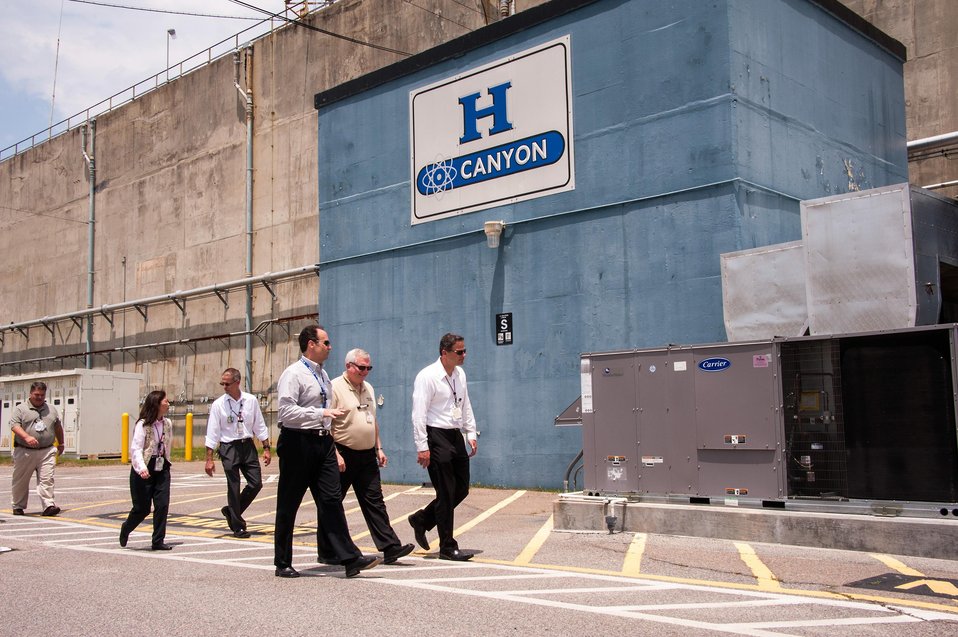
MICHAEL K. LEMPKE, NNSA ASSOCIATE PRINCIPAL DEPUTY ADMINISTRATOR, DURING HIS TOUR OF THE SAVANNAH RIVER SITE'S TRITIUM FACILITIES, H-CANYON AND SAVANNAH RIVER NATIONAL LABORATORY FACILITIES, MAY 20-22, 2013.